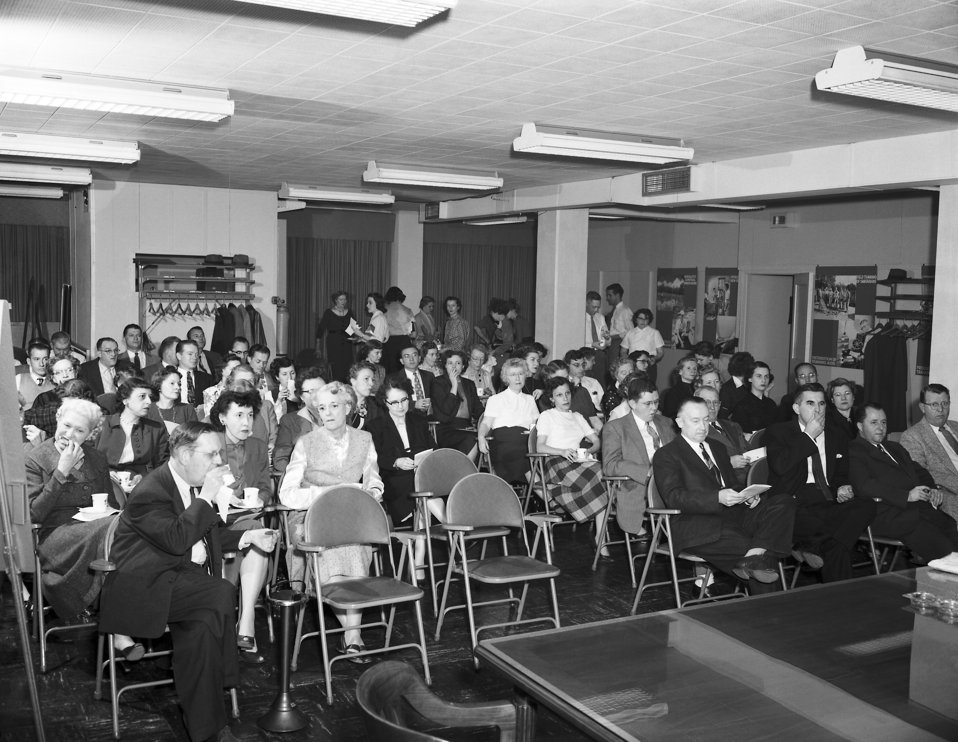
Photo of CDC Credit Union Meeting in 1955.